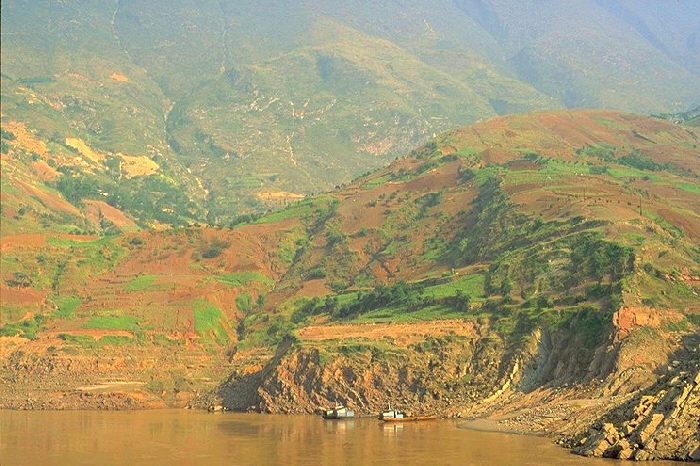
Yangtze River, Three Gorges section.